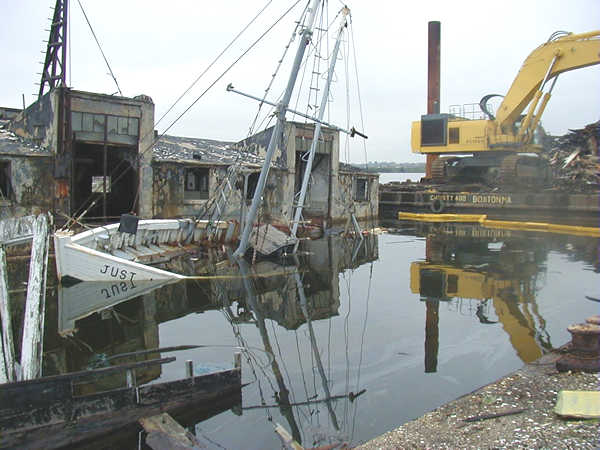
Spring 2002, wooden sail boat awaits removal